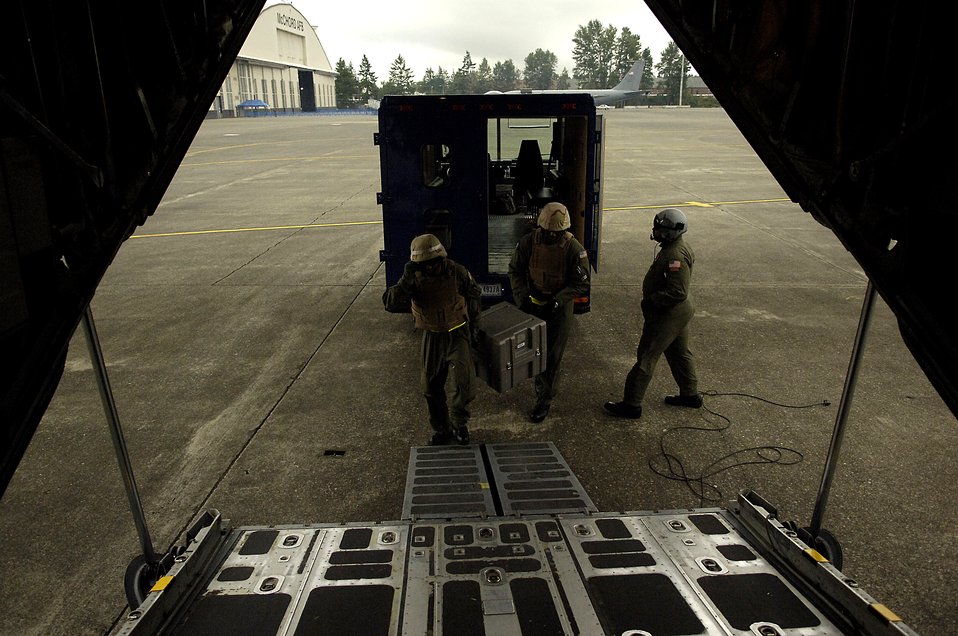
Aeromedical evacuation teams test life saving skills at Rodeo

Tech. Sgt. Kermit McLauchin and Tech. Sgt. Ricardo Brown load medical supplies on a C-130 Hercules for a aeromedical evacuation competition July 23 during Air Mobility Command's Rodeo 2007 at McChord Air Force Base, Wash. Rodeo 2007 is a readiness competition of U.S. and international mobility air forces. The NCOs are medical technicians assigned to the from the 375th Aeromedical Evacuation Squadron at Scott AFB, Ill.